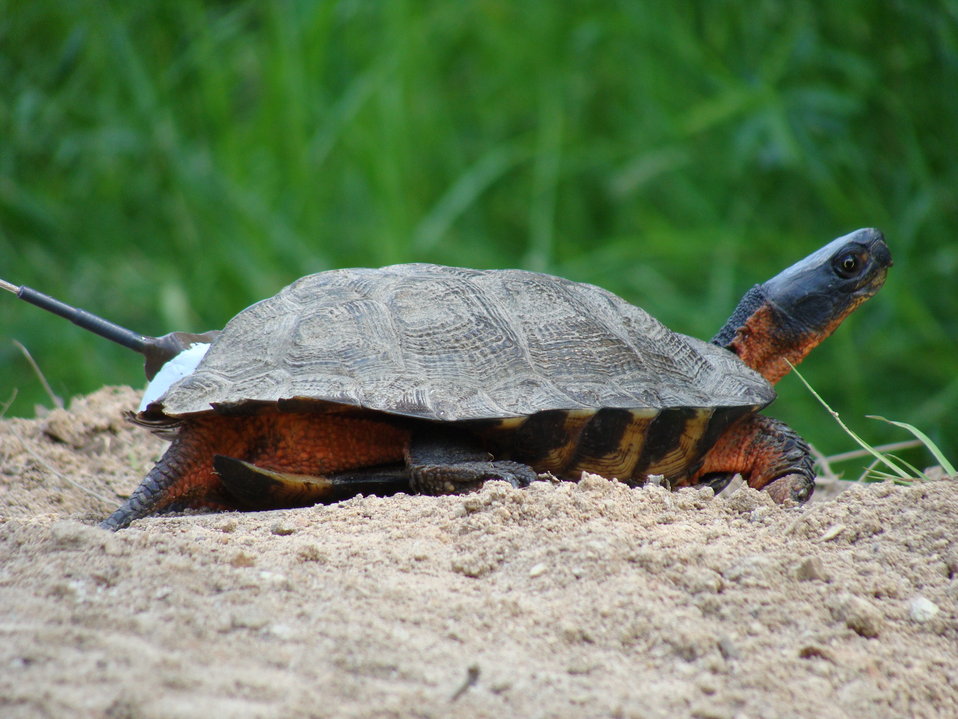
Female Wood Turtle with Radio Transmitter at Great Swamp National Wildlife Refuge